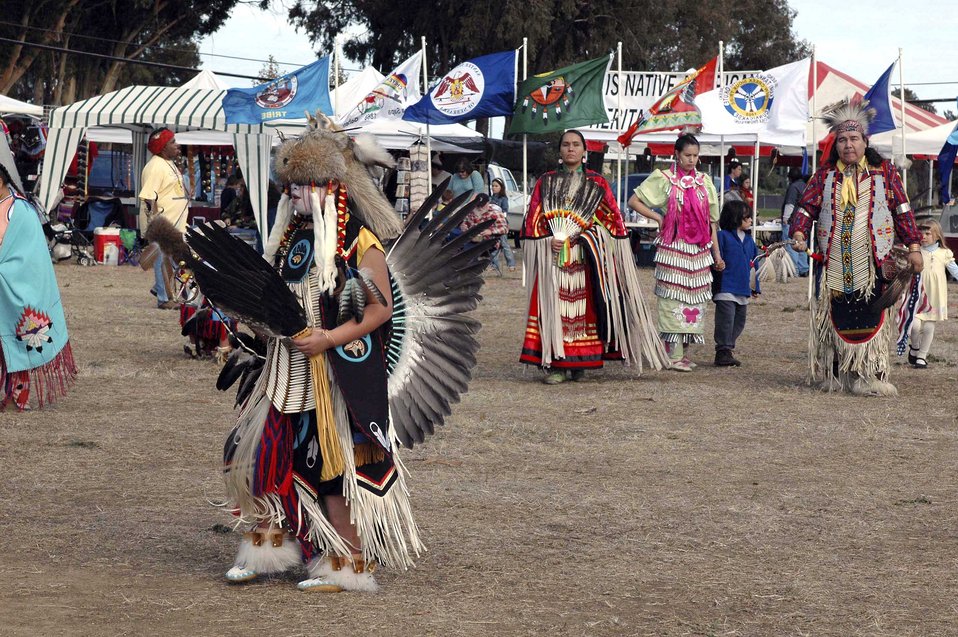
Powwow

TRAVIS AIR FORCE BASE, Calif. (AFPN) -- Native Americans participate in a traditional dance during the fourth annual Veterans Pow Wow here. About 20 separate Native American nations were represented in the two-day event Nov. 5 and 6.